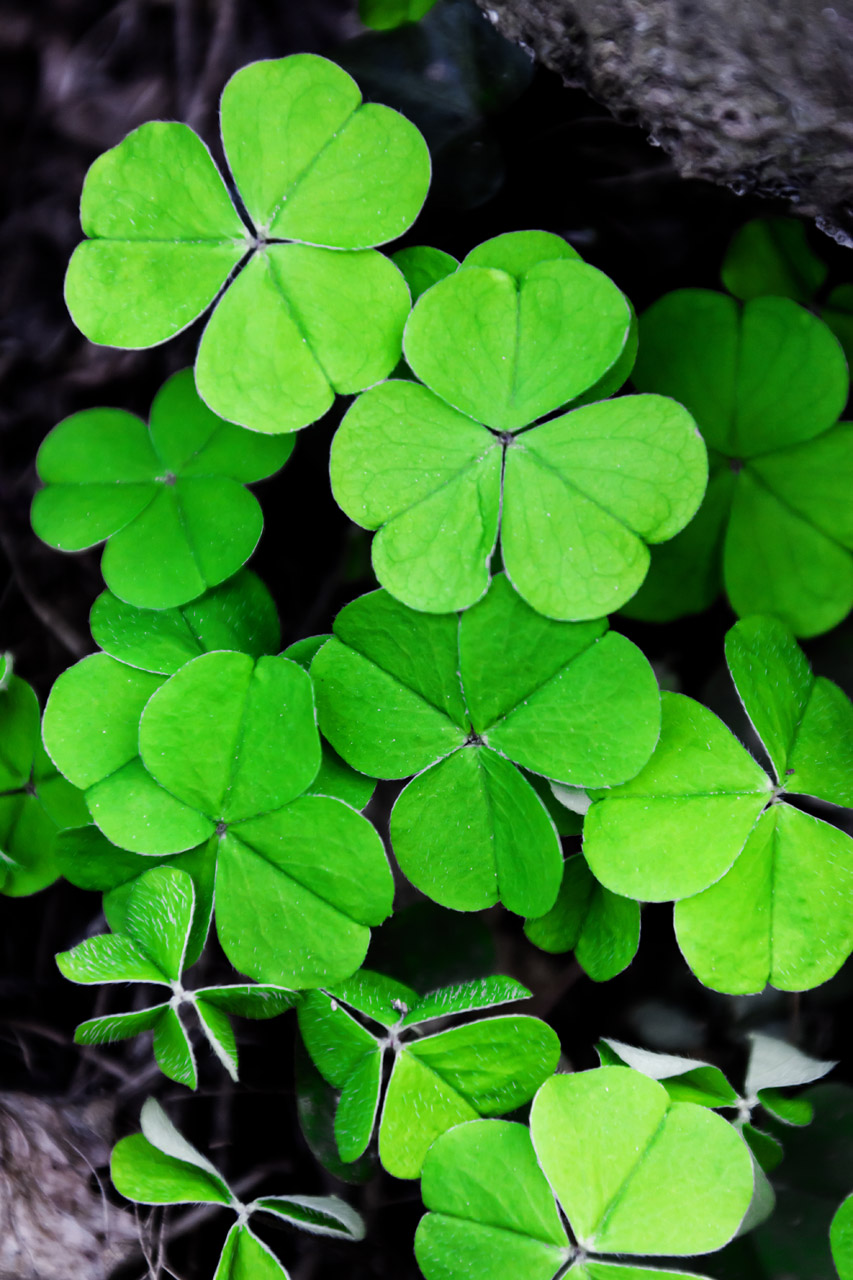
Clovers

Green clovers on black and white background.